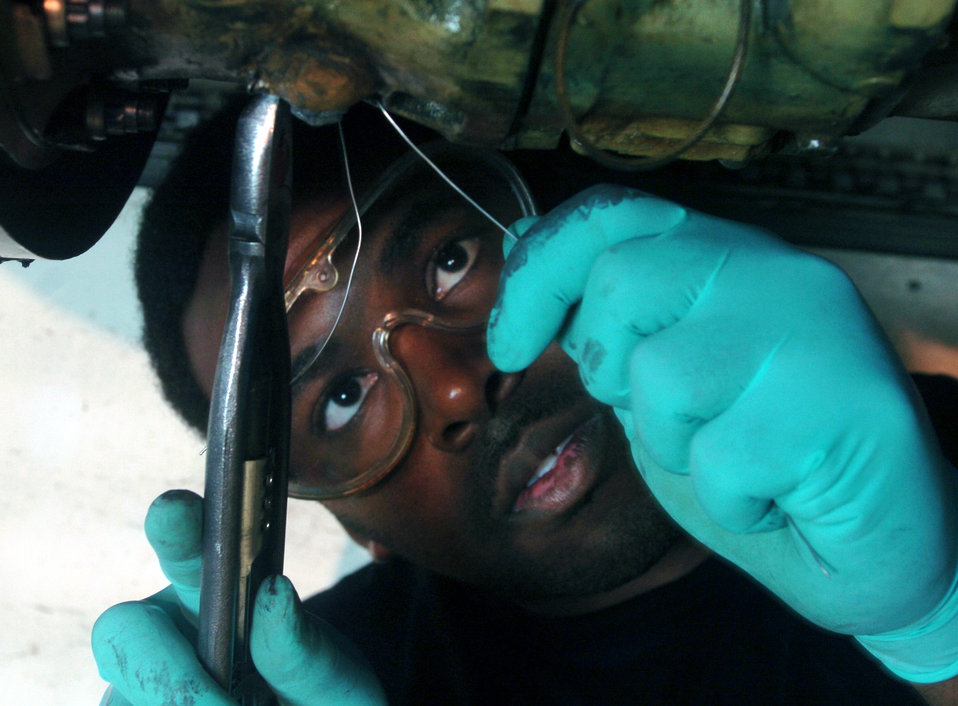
It's just a phase

OSAN AIR BASE, South Korea -- Senior Airman Akiva Key secures a wire on an A-10 Thunderbolt II aircraft during an inspection at the phase dock here Aug. 25. Airman Key is a jet engine mechanic for the 51st Maintenance Squadron. Aircraft mechanics periodically inspect aircraft for cracks, leaks and chaffing to ensure they are in top condition.